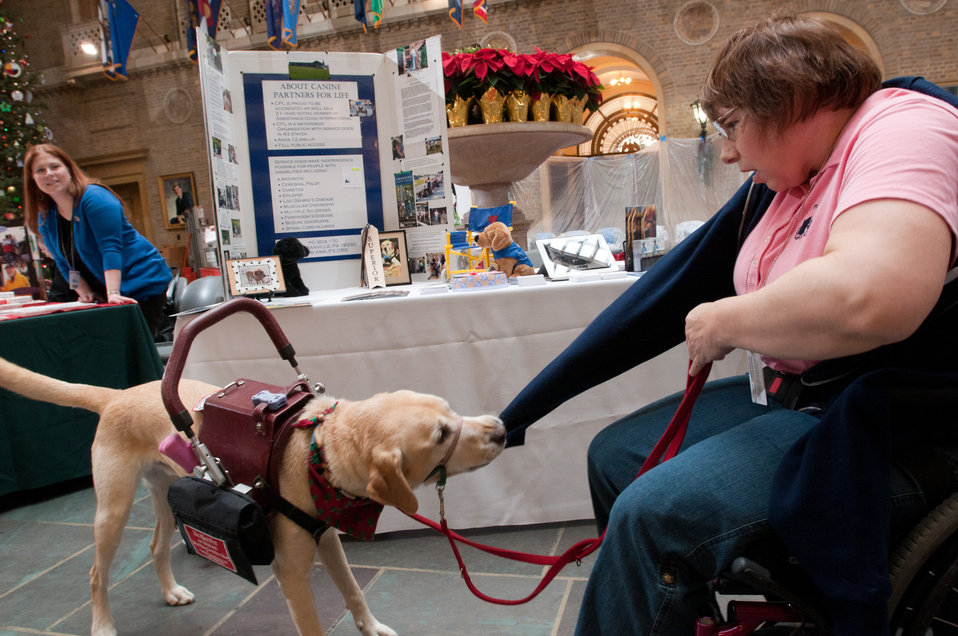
Sharon Tarlano is helped by her canine partner “Chuckwagon” as she removes here sweater near the Canine Partners for Life, information table, during the Combined Federal Campaign (CFC) fundraiser at the U.S. Department of Agriculture (USDA) headquarters, on Monday Dec. 3, 2012, in Washington, D.C. The event featured a 'Pie Smash” event where attendees, on personal time, donate money to throw non-dairy whipped 'cream' pies at Agriculture leadership. Other fund raising activities at this event included a silent auction, candy packets, bake sale, and pulled-pork sandwich lunches for donations. Additionally, information tables for Red Cross and Canine Partners for Life provided people with answers about the organizations and how to participate.